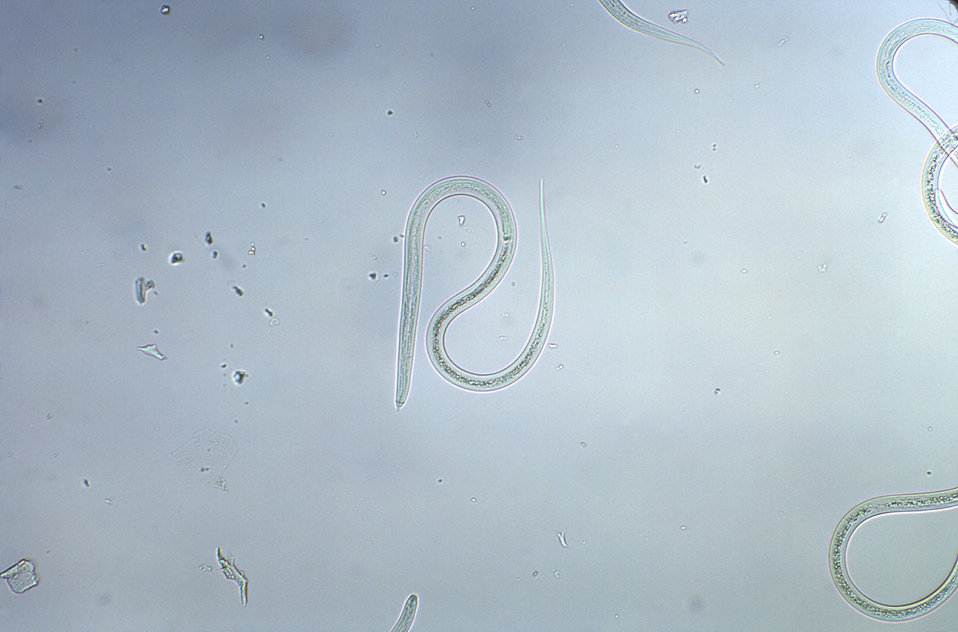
Under a magnification of 128X, this photomicrograph revealed the presence of a number of Strongyloides sp filariform larval-staged organisms. Infective, third-stage filariform larvae (L3) of Strongyloides stercoralis are up to 600�m long. The tail is notched (see PHIL 1509, under higher magnification), and the esophagus to intestine ratio is 1:1. Infective L3 larvae are found in soil and invade the human host by direct penetration of the skin. They may be found in respiratory specimens during cases of autoinfection.